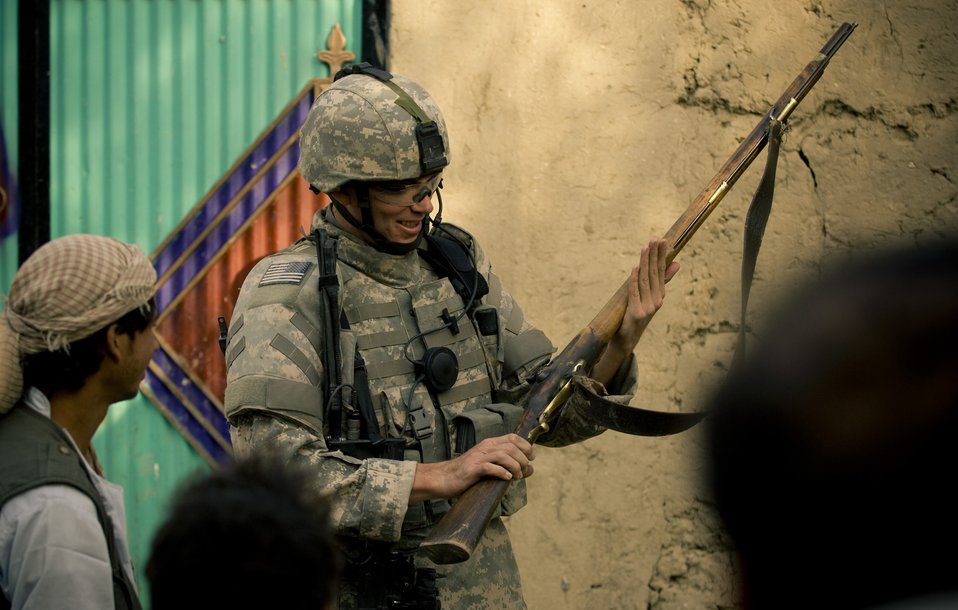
Village visit

A villager shows an Airman his hunting rifle recently at a village in Afghanistan. Allowing an American to admire his rifle -- his primary means for hunting -- shows the trust local Afghans have for their coalition benefactors.